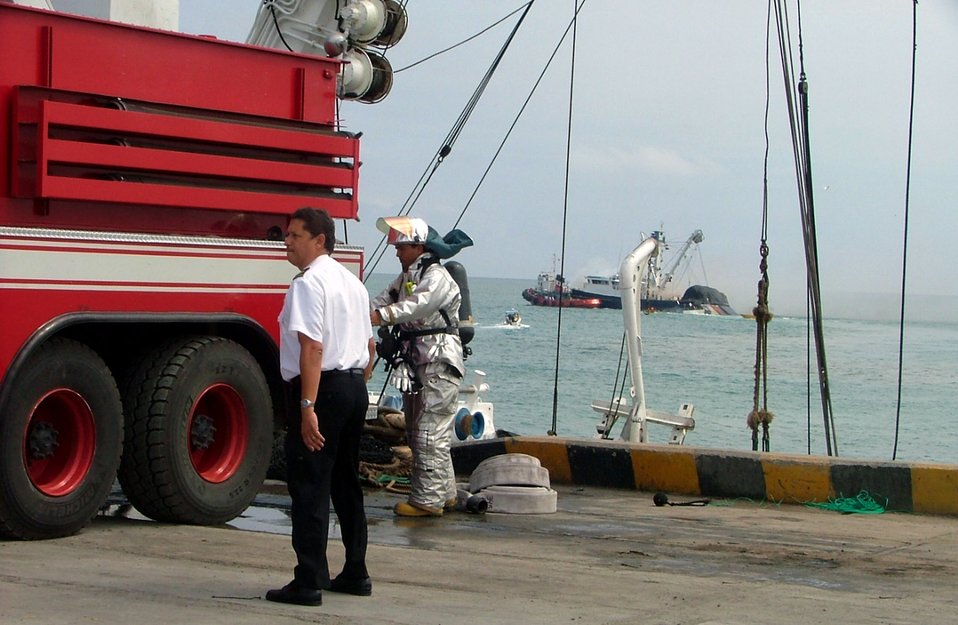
FOL Manta firefighters assist local firefighters

Fire Chief Rafael Torres observes operations as a firefighter gets his gear ready Sept. 26 at Forward Operating Location Manta. FOL Manta firefighters assisted local authorities in putting out a fishing boat fire at a local pier.